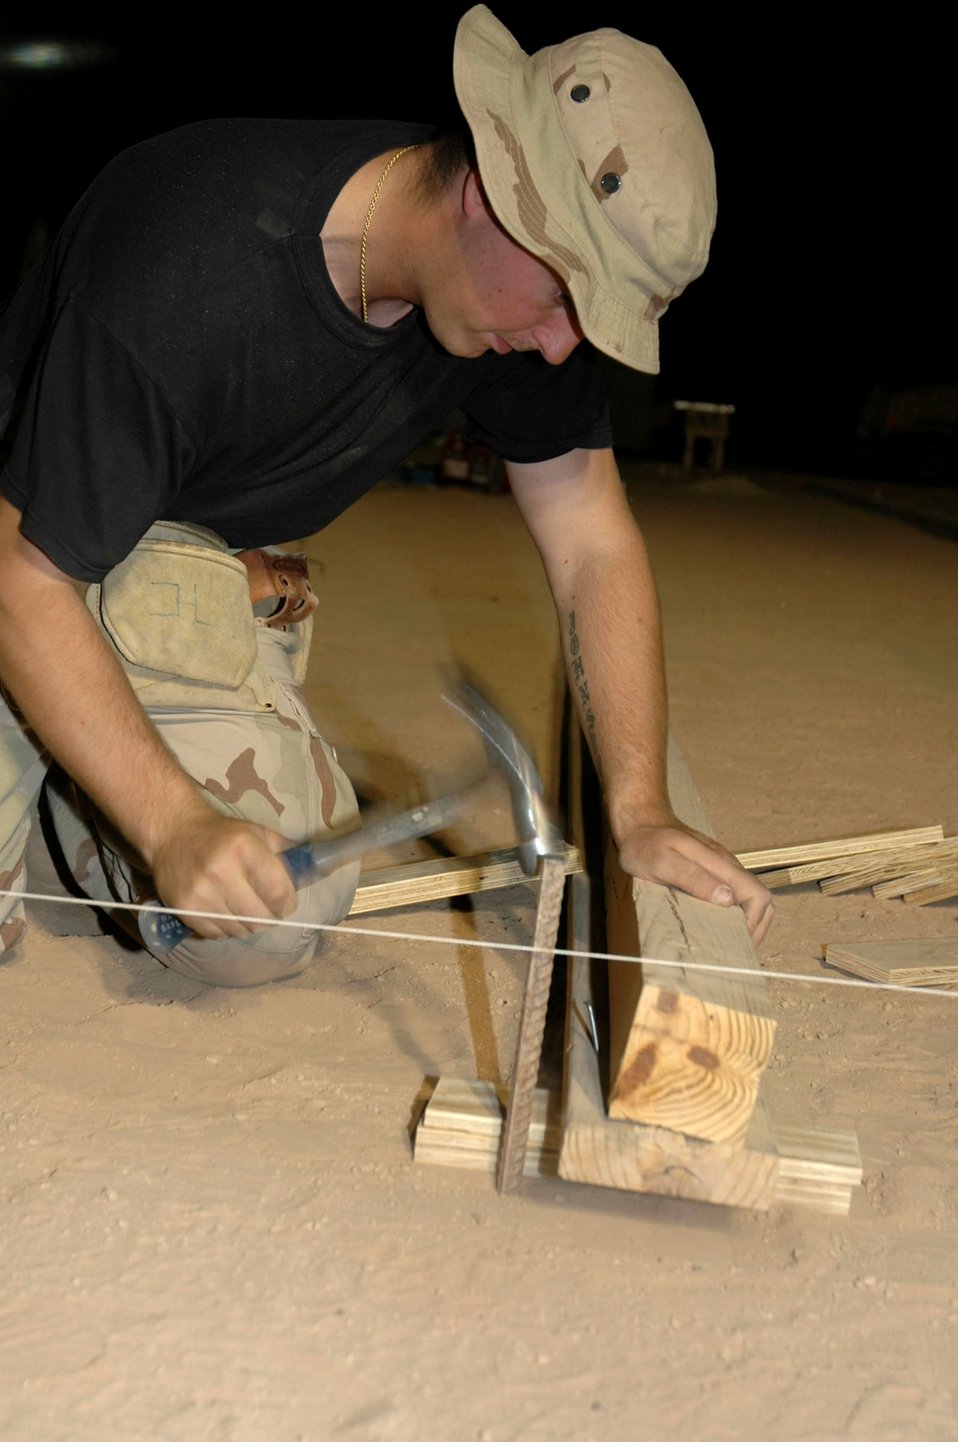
Civil engineer units have different missions, same goal

LOGISTICS SUPPORT AREA ANACONDA, Iraq -- Senior Airman James Johnston and other Airmen with the 732nd Expeditionary Civil Engineer Squadron Detachment 6 vertical shop are building 30 new 3,000-square-foot living quarters for Soldiers here. He is deployed from Dover Air Force Base, Del.